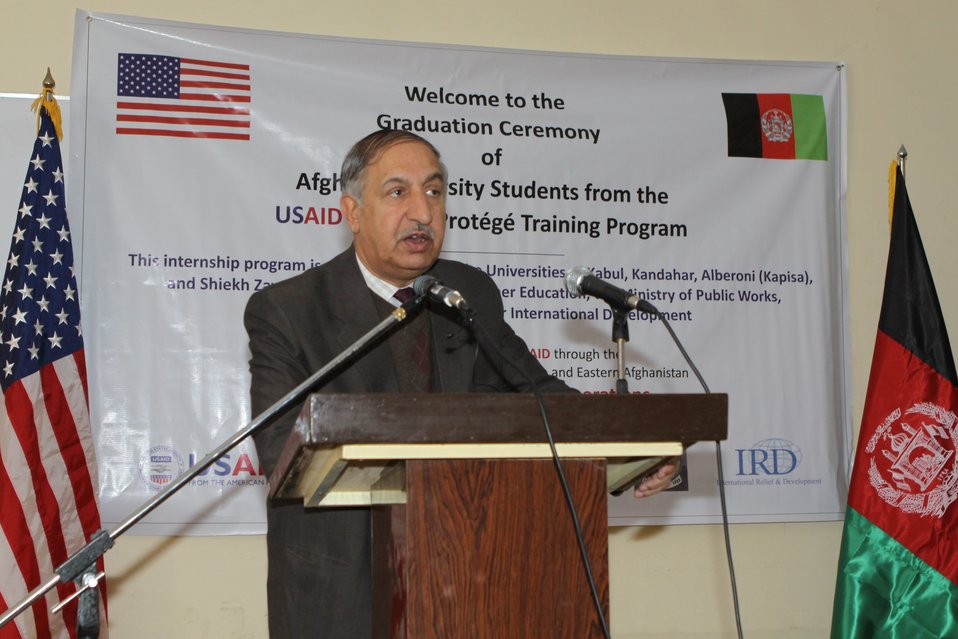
Female University Students Complete Internship

Kabul, Afghanistan | March 16, 2011 – In response to a demand for qualified Afghan engineers, Kabul University celebrated completion of an intensive five-month Mentor Protégé Training Program today by 10 female fourth year university students. The Training Program is a joint effort between the Government of the Islamic Republic of Afghanistan, the U.S. Agency for International Development (USAID), and the Universities of Kabul, Kandahar, Alberoony in Kapisa, Shiekh Zayed in Khost. The graduation ceremony highlighted collaboration with these national institutions in building the technical skills of young Afghans, made possible by USAID.

Four of the interns are engineers, while the remaining six are from the faculties of computer science, economics, and psychology.

Speaking about the event, H.E. Minister of Public Works Abdul Qudus Hamidi said, “The future of Afghanistan lies in developing the skills of our youth, and the engineering skills of these graduates today represent a small but important step forward for the country.”

Keynote speakers at the ceremony included H.E. Deputy Minister of Higher Education Abdul Rahim; USAID Senior Deputy Mission Director Robert Hellyer; and Chancellor of Kabul University Professor Hamidullah Amin. Approximately 150 people, including current and former students attended the graduation.

Launched last year, the Mentor Protégé Training Program has provided qualifying students the opportunity to intern with USAID’s Strategic Provincial Roads-South and East Afghanistan project and gain practical experience in a real work environment. The goal of the program was to offer interns the opportunity to gain hands-on experience to reinforce their formal studies. A total of 30 students from four national universities have benefitted from this program.

“The promotion of women’s rights is integrated into the overall U.S. Government development strategy and can be found in key programs, including education, healthcare, security, rule of law, political participation, agriculture, and economic development,” said Robert Hellyer. “The U.S. Government is committed to the Afghan leadership of programs that directly enhance development, particularly as it relates to women’s issues.”

This event also highlighted the learning achievements of students and emphasized the importance of hands-on internship programs. The curriculum is designed to instill students with the knowledge and confidence to qualify for engineering positions upon completion of their fourth year at their respective universities.